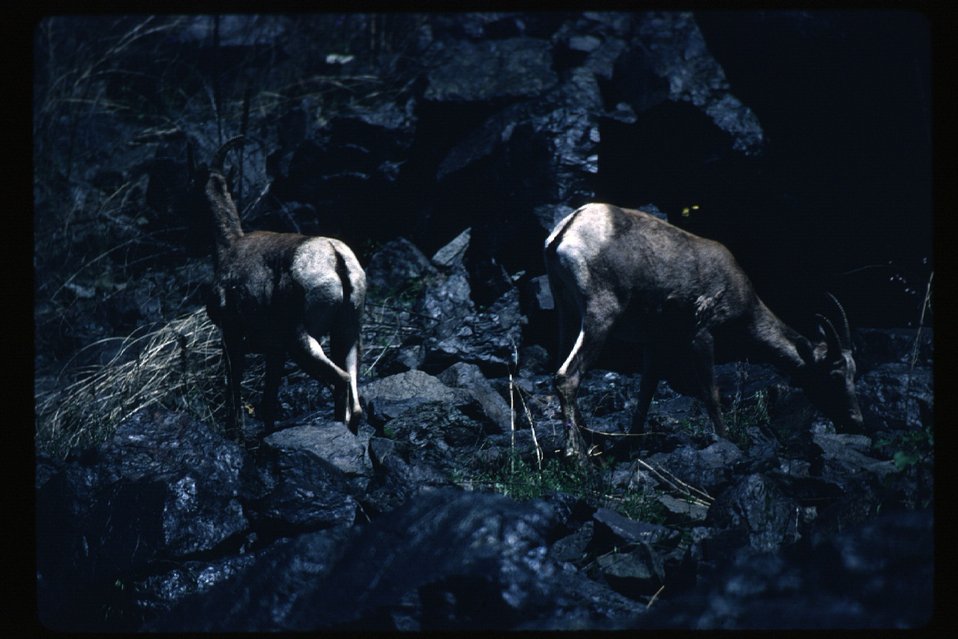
Bighorn sheep UCSC Upper Columbia Salmon Clearwater District